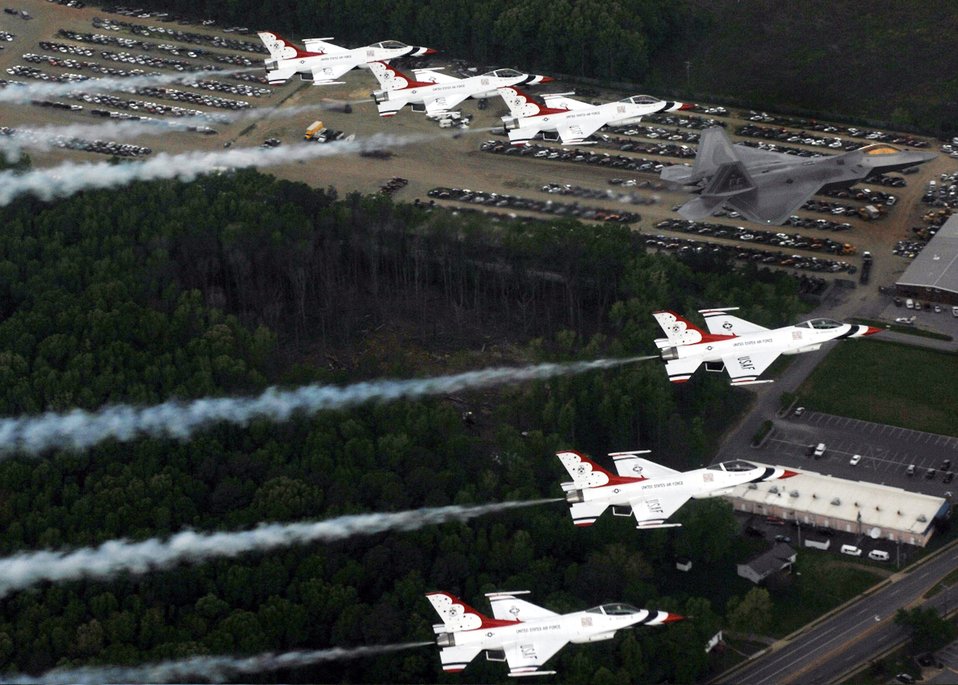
Raptor leads the way

Maj. Max Moga an F-22 Raptor demonstration pilot leads six Thunderbird F-16 Fighting Falcons in formation over Langley Air Force Base, Va., during their practice day April 27 for the Airpower Over Hampton Roads air show scheduled April 28 and 29.